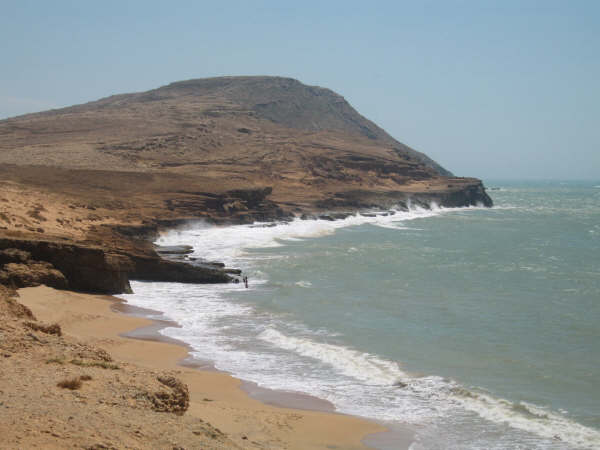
Cabo de la Vela (cape of sails), La Guajira Desert by the Caribbean Sea.